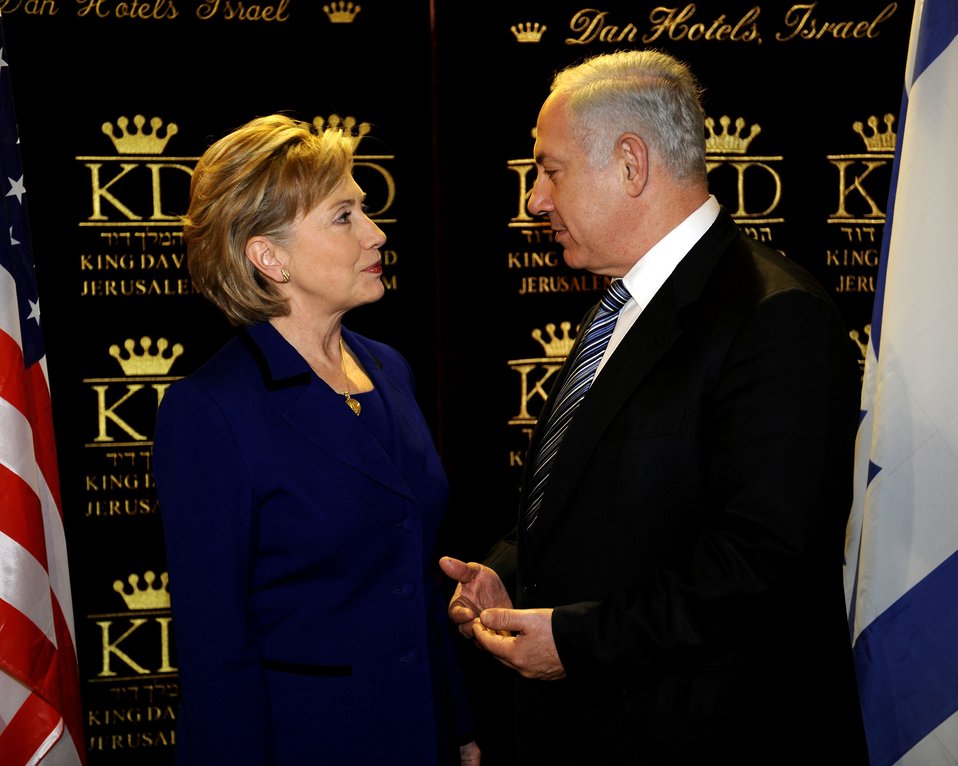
Secretary Clinton before her meeting with Israeli Prime Minister-Designate Benyamin Netanyahu at the King David Hotel, Jerusalem March 3, 2009.